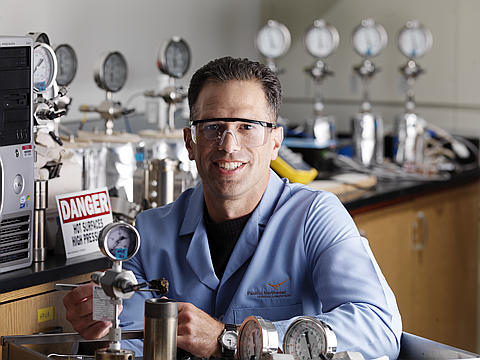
Pacific Northwest National Laboratory addresses carbon emissions that contribute to climate change which has become an international challenge.
A team studying basalts to determine if carbon dioxide can be safety and permanently stored in these massive, deep underground rock formations.